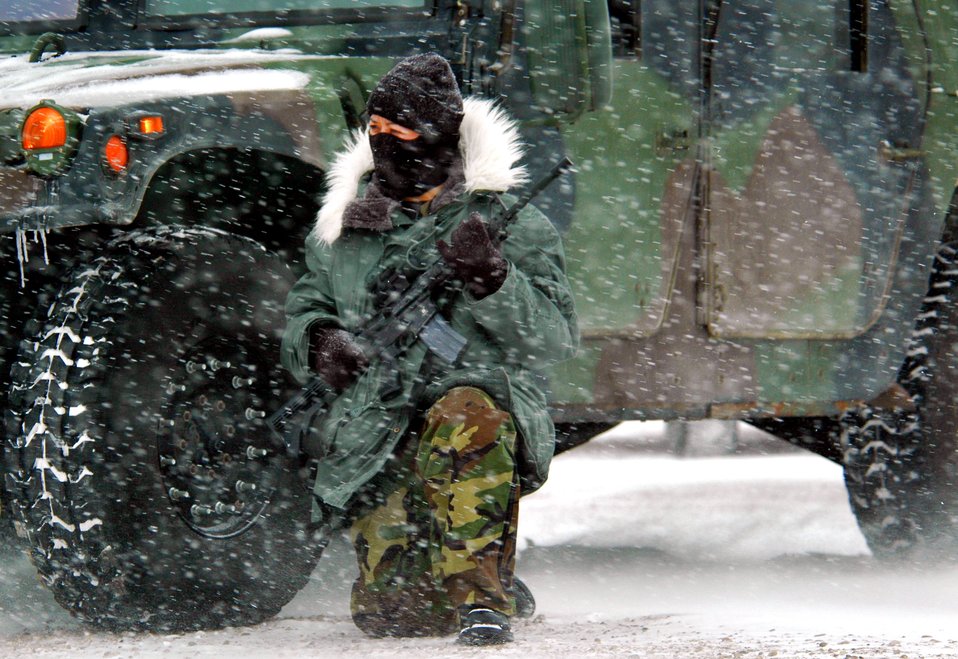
Keeping a wary eye

Senior Airman Shareen Blas takes up her position during security training Feb. 13 at a missile site training area on Minot Air Force Base, N.D. Airman Blas and members of the North Dakota Air National Guard's 119th Wing in Fargo receive missile site defense training on a regular basis.